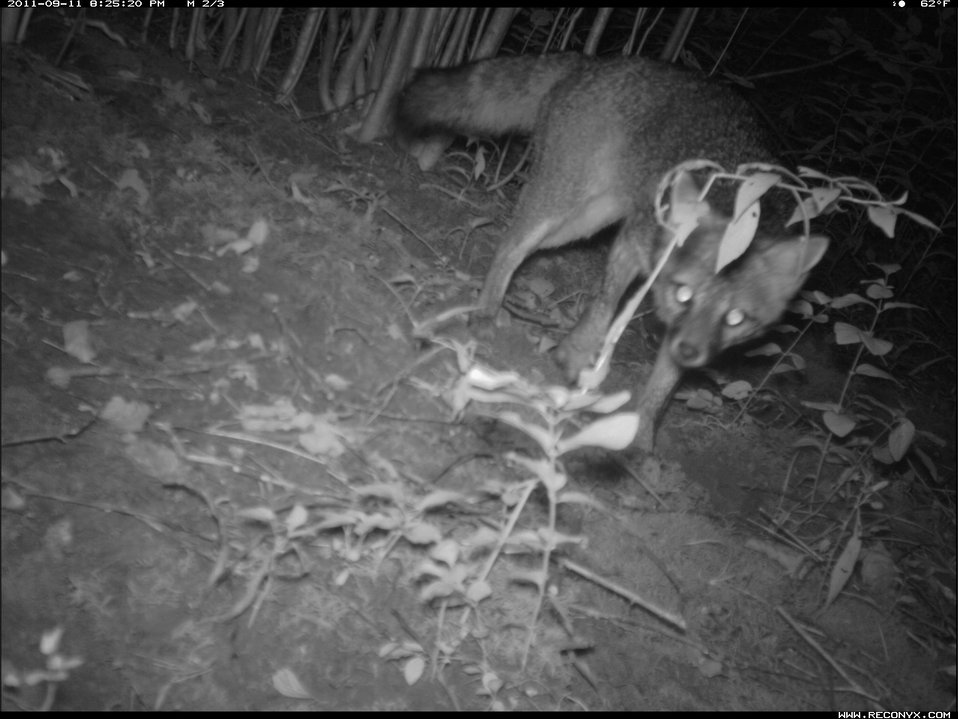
Grey Fox